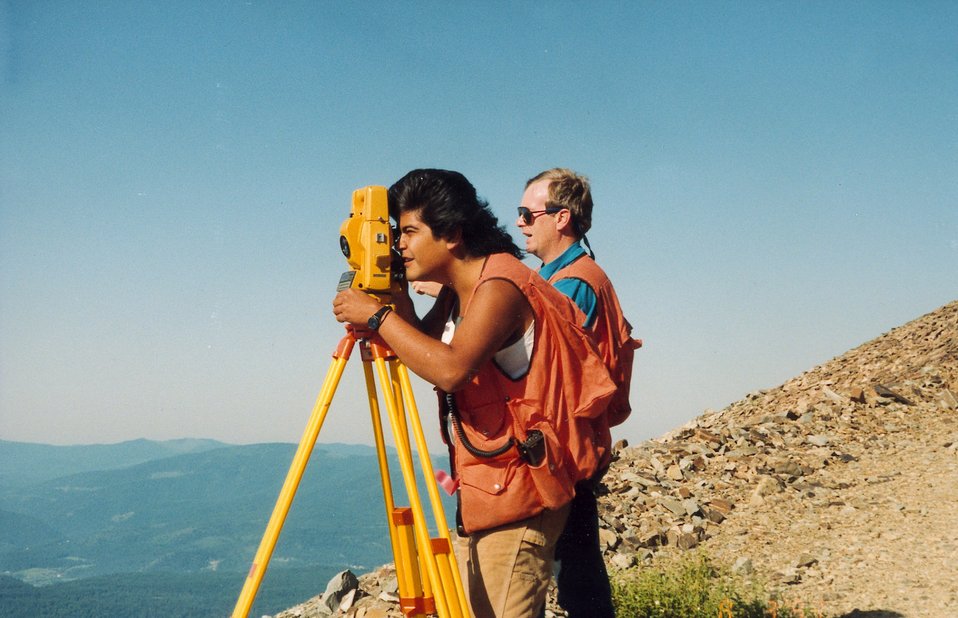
Cadastral Surveys Idaho Bureau of Land Management